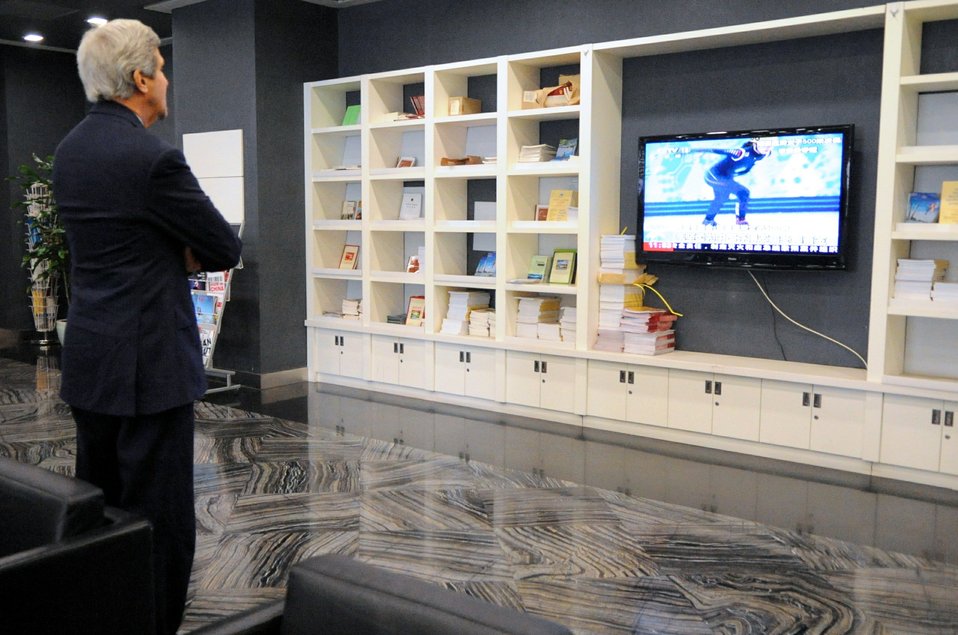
Secretary Kerry Watches Olympic Speedskating During Break in Chinese Leadership Meetings

U.S. Secretary of State John Kerry watches Olympic speed skating while waiting for a meeting to start at the Ministry of Foreign Affairs in Beijing, China on February 14, 2014.